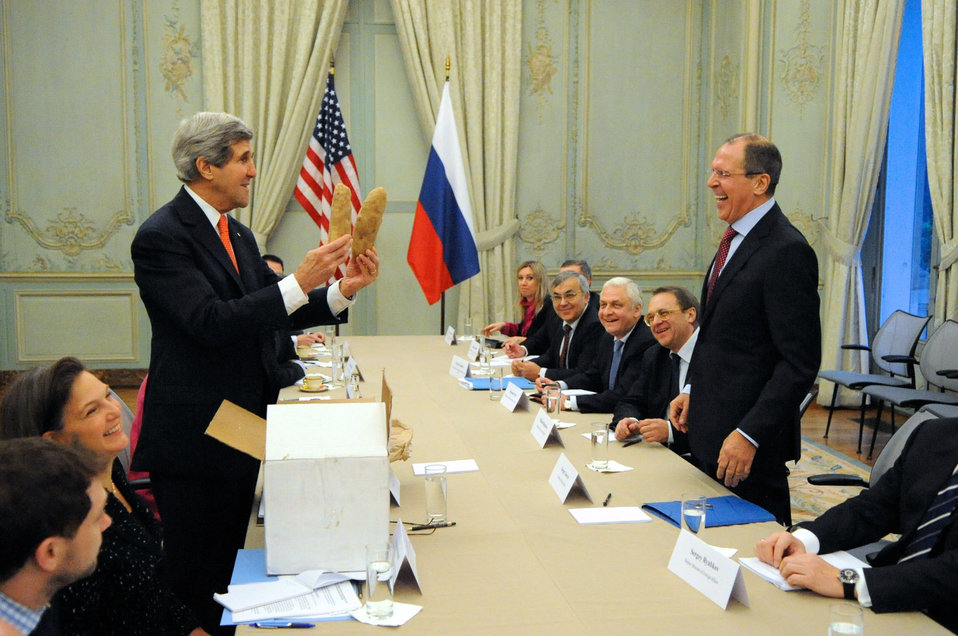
Secretary Kerry Displays a Pair of Idaho Potatoes for Russian Foreign Minister Lavrov

U.S. Secretary of State John Kerry shows Russian Foreign Minister Sergey Lavrov a pair of giant Idaho potatoes -- once a subject of discussion between them -- before a bilateral meeting with their respective staffs in Paris, France, on January 13, 2014.